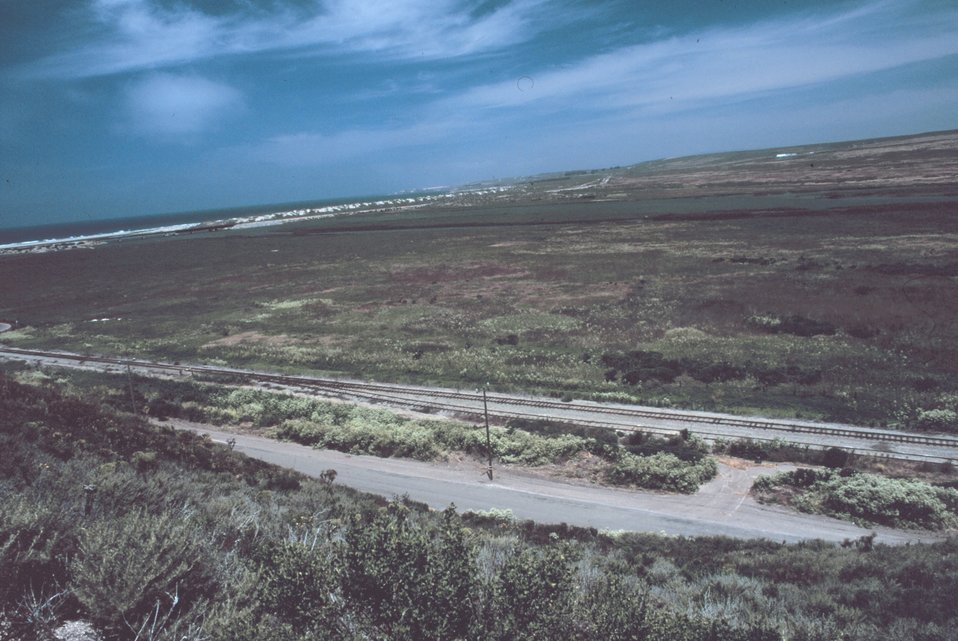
Looking over coastal wetlands towards a strand of beach near Vandenburg AFB